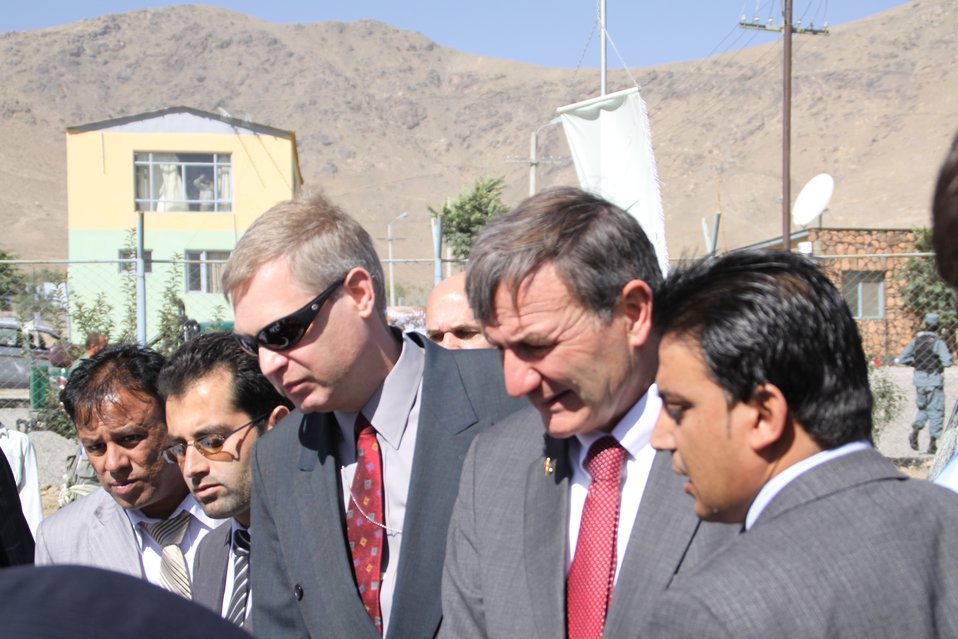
AVIPA Plus Wheat Seed Distribution 101005

US Ambassador Karl Eikenberry and USAID Acting Mission Director Kevin Brownawell joined the Minister of Agriculture, Irrigation and Livestock, H.E. Minister Mohammed Rahimi in signing a Memorandum of Understanding and distributing vouchers to area farmers for wheat and fertilizer.